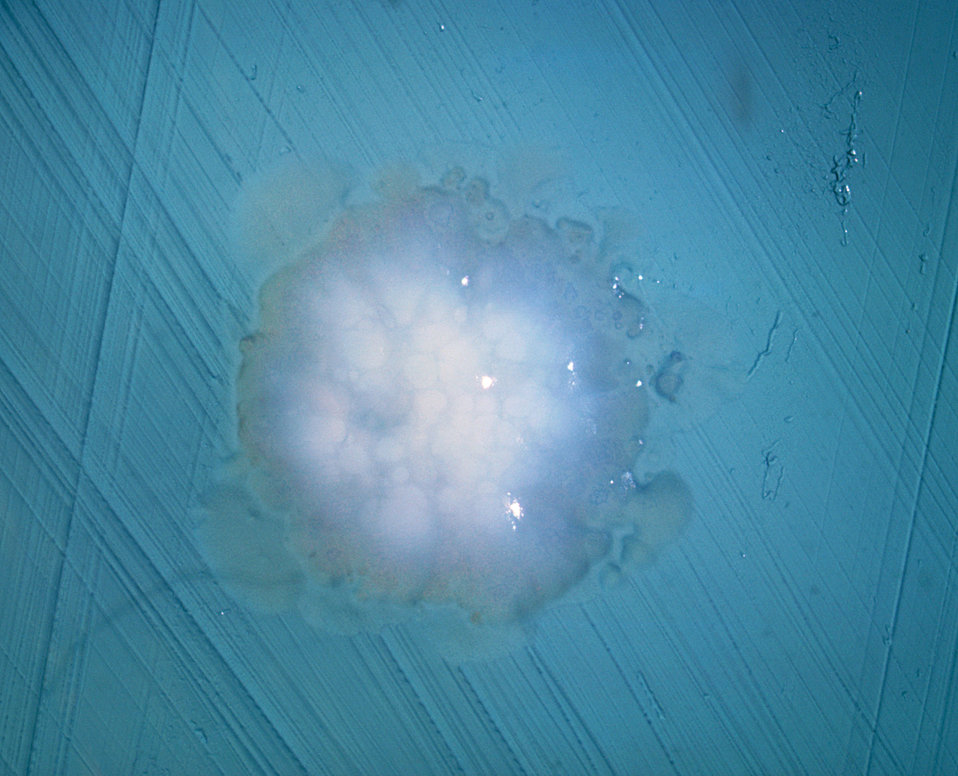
A BHI agar plate culture of Actinomyces sp., strain X-407, at 7 days, incubated anaerobically.